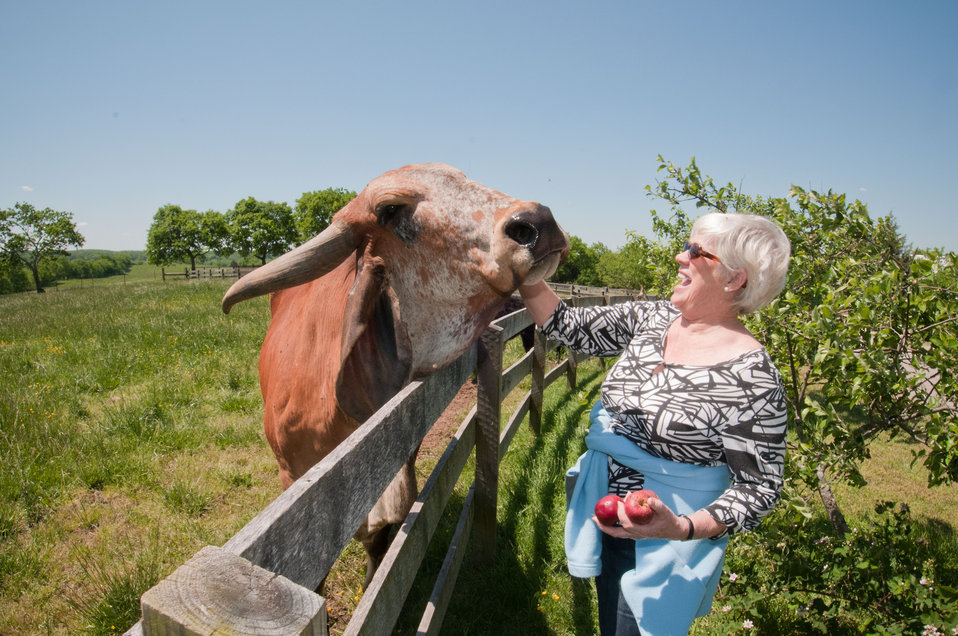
Bunny the Brahma cow is always ready for photos, a scratch on the neck or a juicy apple from Rossie Fisher, co-owner of Brookview Farm in Manakin-Sabot, VA, on Thursday, May 5, 2011.This is one of many farms participating with Fall Line Farms a local food cooperative in the Richmond, VA area that offers a wide variety of household food staples and specialty items on an ever changing inventory of fruits, vegetables, meats, soaps, eggs, cheeses, flowers, honey, pastas, sauces, syrups, baked goods, mushrooms, flour and grains. Suppliers post what they have on a Lulus Local Food online listing and customers can make their selection. Every Thursday suppliers deliver orders to, one of several pick-up points, designated by the customers in or around the Richmond area.